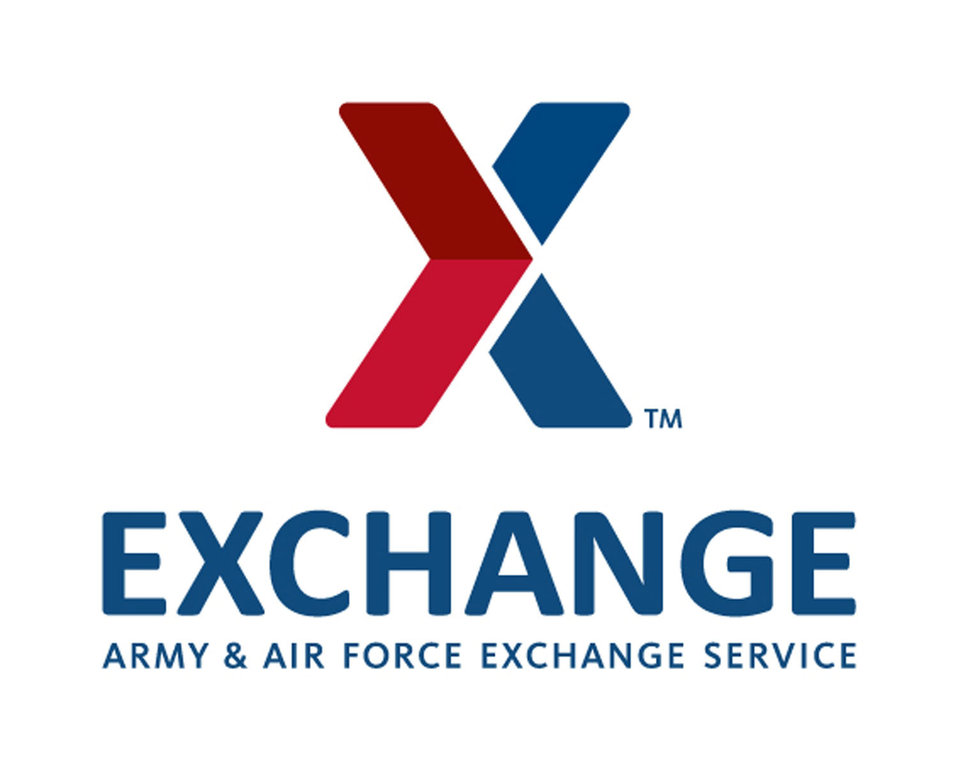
AAFES changes name of exchanges